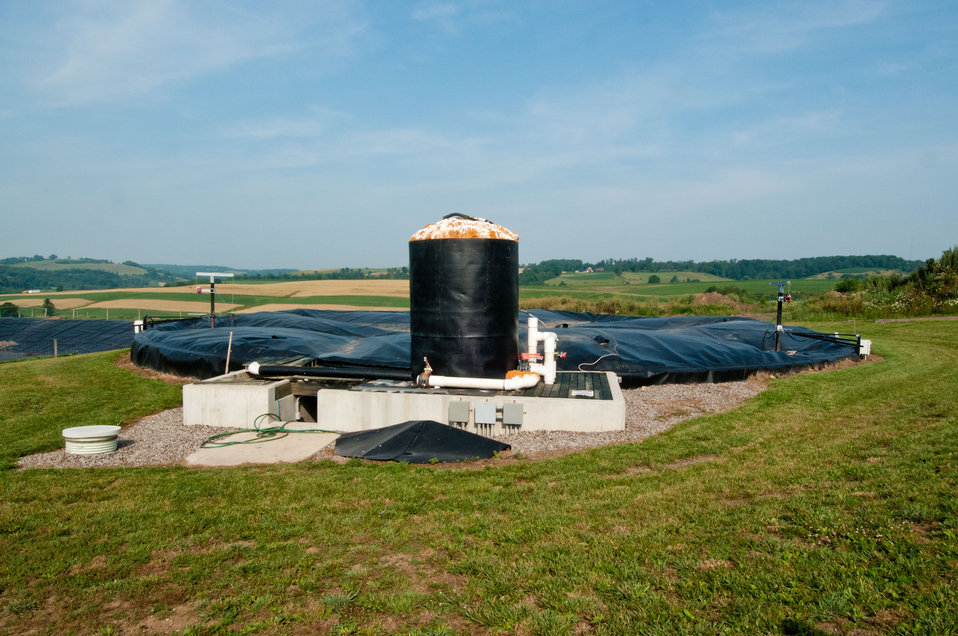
The anaerobic digester on the Pennwood Dairy Farms, Berlin, PA used to produce energy for the dairy. The digester produces one million kilowatt hours; half of the energy needs of the farm, the other five hundred thousand kilowatt hours are sold back to the grid. An anaerobic digester is a component of a waste management system that provides biological treatment in the absence of oxygen. The digester captures biogas for energy production, manages odors, reduces the net effect of greenhouse gas emissions, and reduces pathogens. The anaerobic digester practice is part of a planned conservation management system that manages manure and/or comprehensive nutrient management system. Agriculture Secretary Tom Vilsack visited the dairy on Tuesday, July 17, 2012 to announce the U.S. Department of Agriculture’s (USDA) energy efficiency programs and announced a new effort to help rural consumers make affordable, energy-efficient improvements to their homes and businesses.